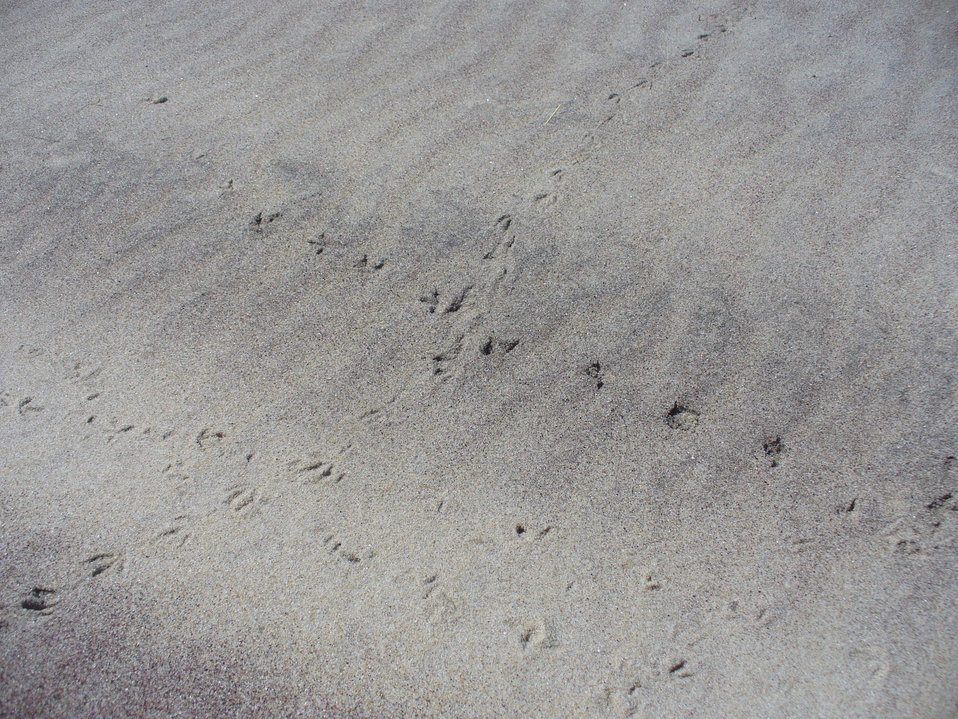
Piping Plover Tracks

Photographed at Wertheim National Wildlife Refuge.